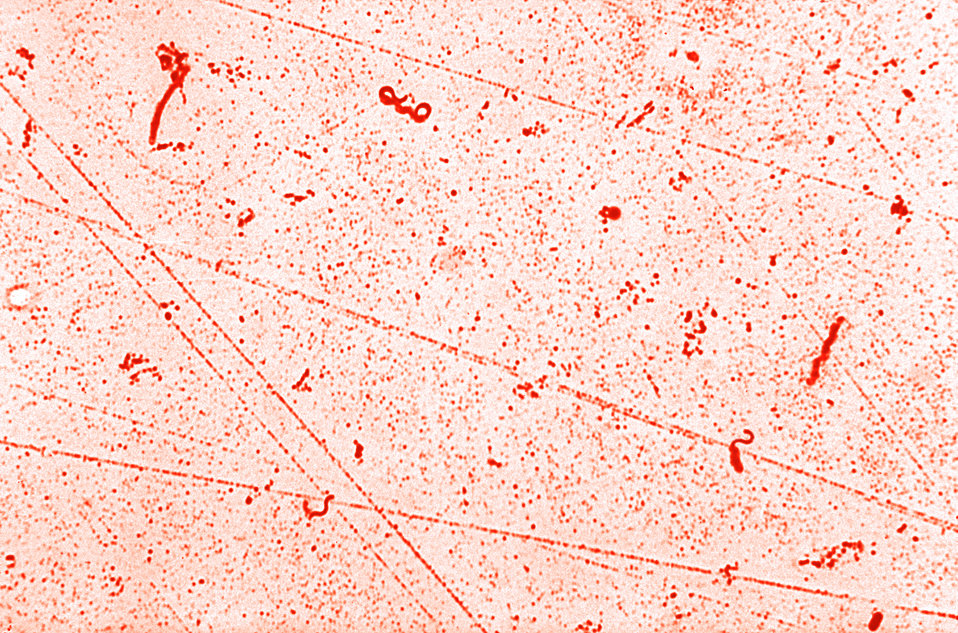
Campylobacter fetus. Leifson flagella stain (digitally colorized).